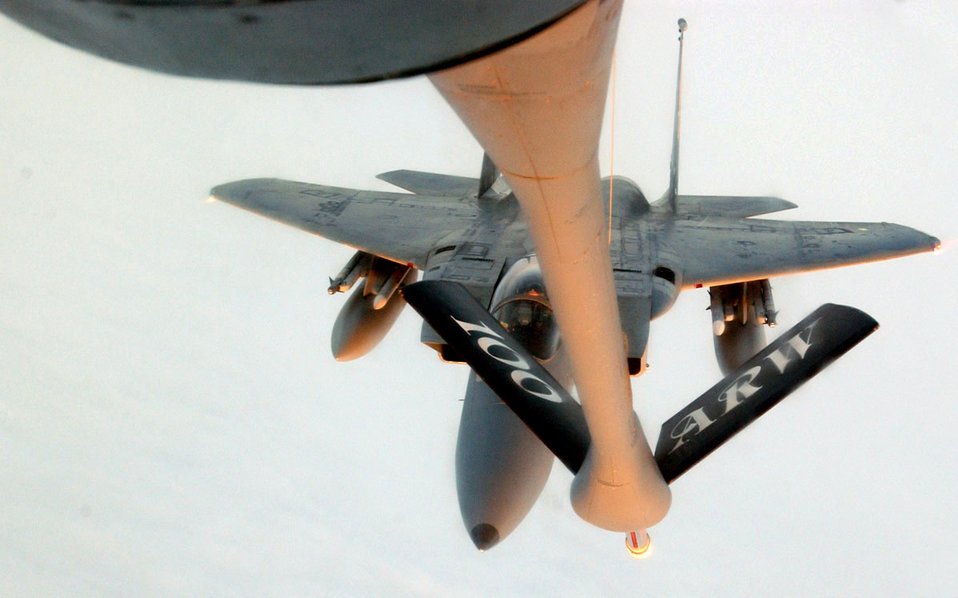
Refueling over Europe

A KC-135 Stratotanker from the 100th Air Refueling Wing at Royal Air Force Mildenhall, England, prepares to offload fuel to an F-15 from the 48th Fighter Wing at RAF Lakenheath, England. The F-15 joined other U.S. Air Forces in Europe aircraft from Aviano Air Base, Italy, and Spangdahlem AB, Germany, to provide security for the NATO Riga Summit that took place Nov. 28-29 in Latvia where the heads of state and government from the 26 NATO member countries met. Also providing support from USAFE were the 32nd Air Operations Center, the 1st Combat Communications Squadron, and the 616th Air and Space Communications Squadron from Ramstein AB, Germany.